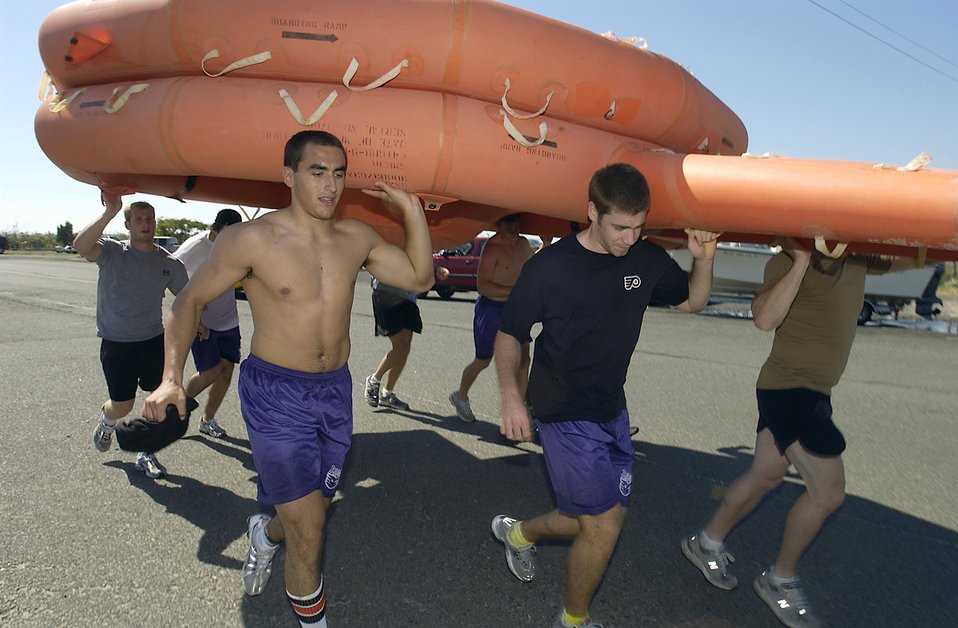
Hockey team participates in Air Force survival training

LONG ISLAND BEACH, N.J. -- Players from the Philadelphia Phantoms American Hockey League team and aircrew members from nearby McGuire Air Force Base capped off a day of water-survival training with a two-and-a-half-mile raft race Sept. 23. The participants carried a life raft over their heads during the race. The Phantoms participated in the survival exercise as part of their training camp workout.